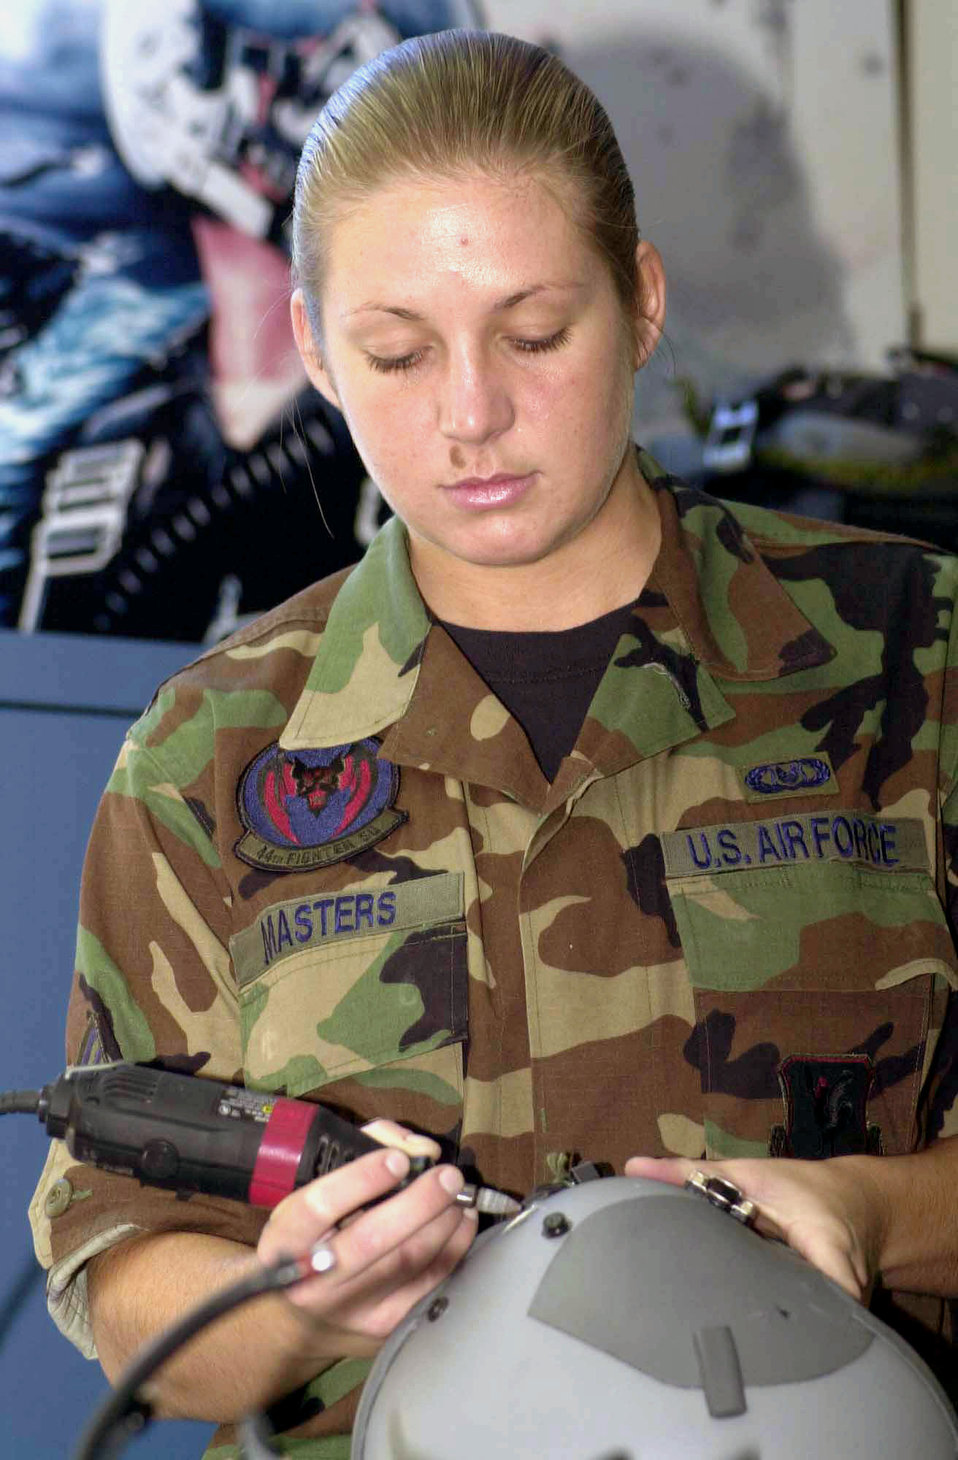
Combat Edge

KADENA AIR BASE, Japan. -- Senior Airman Lauren Masters drills holes in pressurized helmets here Dec. 13. This process is called Combat Edge, and prevents the pilot from blacking out when pulling G forces. Airman Masters is a life support apprentice assigned to the 44th Fighter Squadron.